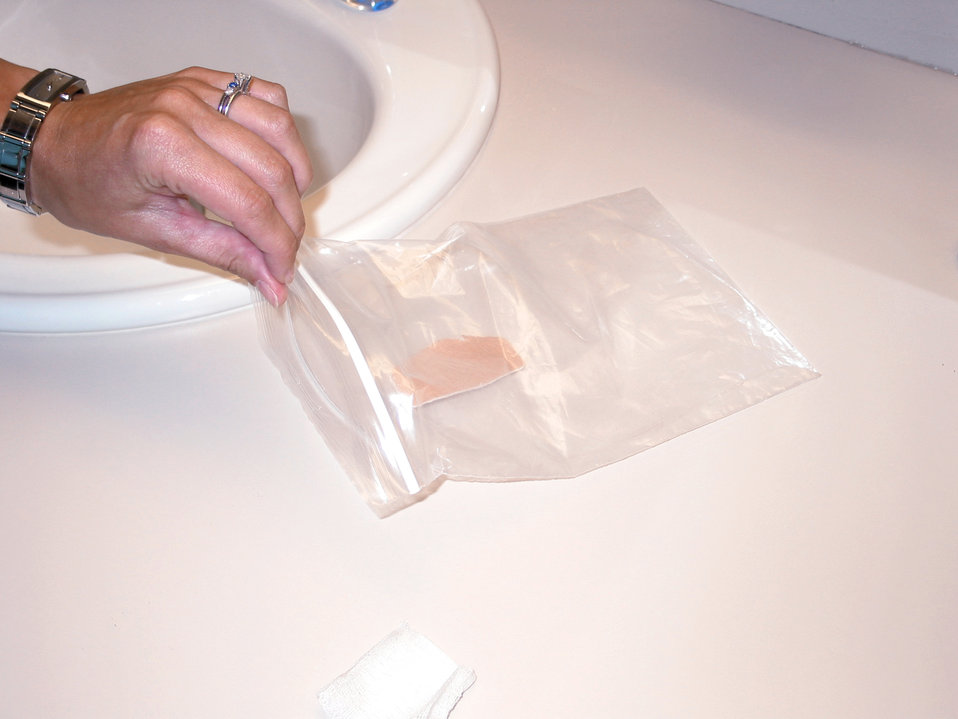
This smallpox vaccinee is shown placing a dirty waterproof bandage into a sealable plastic bag.